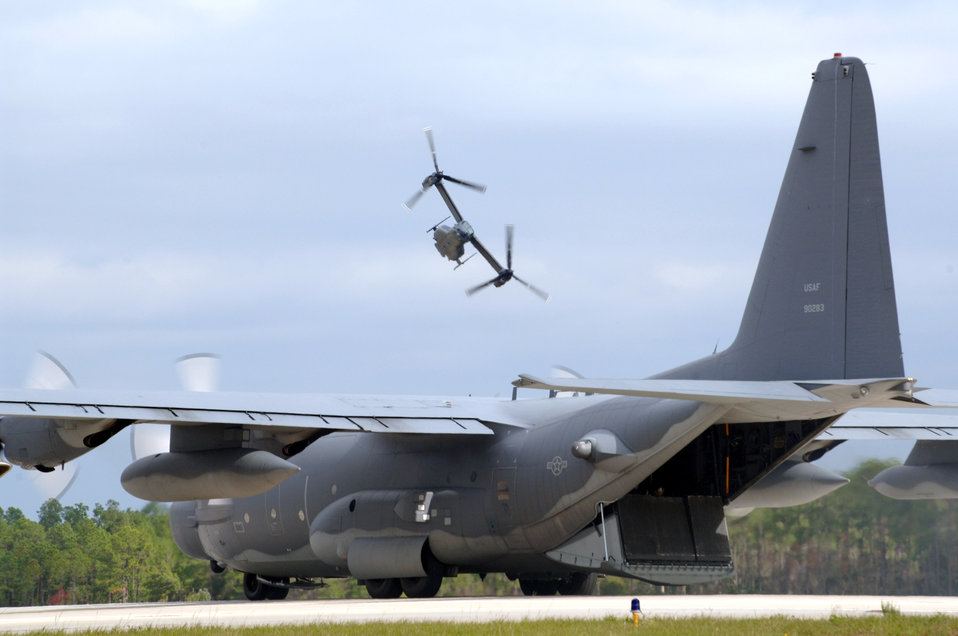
Heritage to horizons

The CV-22 Osprey flies over the Hurlburt Field, Fla., flightline during its unveiling ceremony Nov 16. The arrival of the CV-22 to Air Force Special Operations Command is part of Hurlburt Field's Heritage to Horizon commemoration, reflecting on the heritage of air commandos, reaffirming the commitment to the war on terrorism and resolving to continually expand capabilities. The commemoration also includes marking the re-designation of the 16th Special Operations Wing to the 1st SOW and the Air Force's 60th birthday.